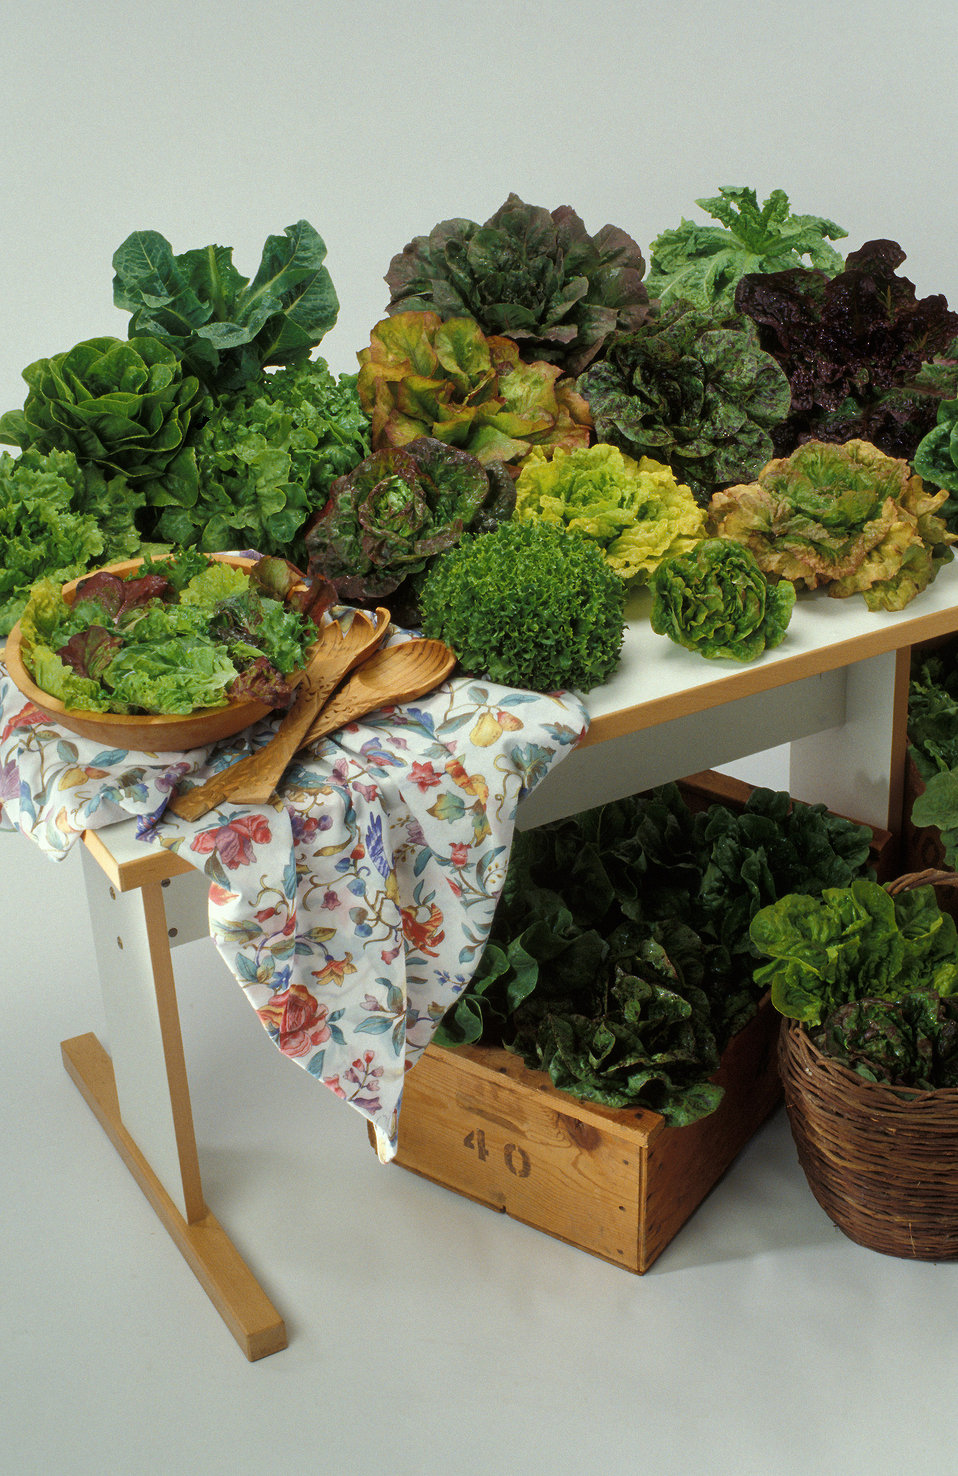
Seeds of the world's most unusual lettuces are safeguarded at a U.S. Department of Agriculture (USDA) Agricultural Research Service (ARS) gene bank in Salinas, CA.